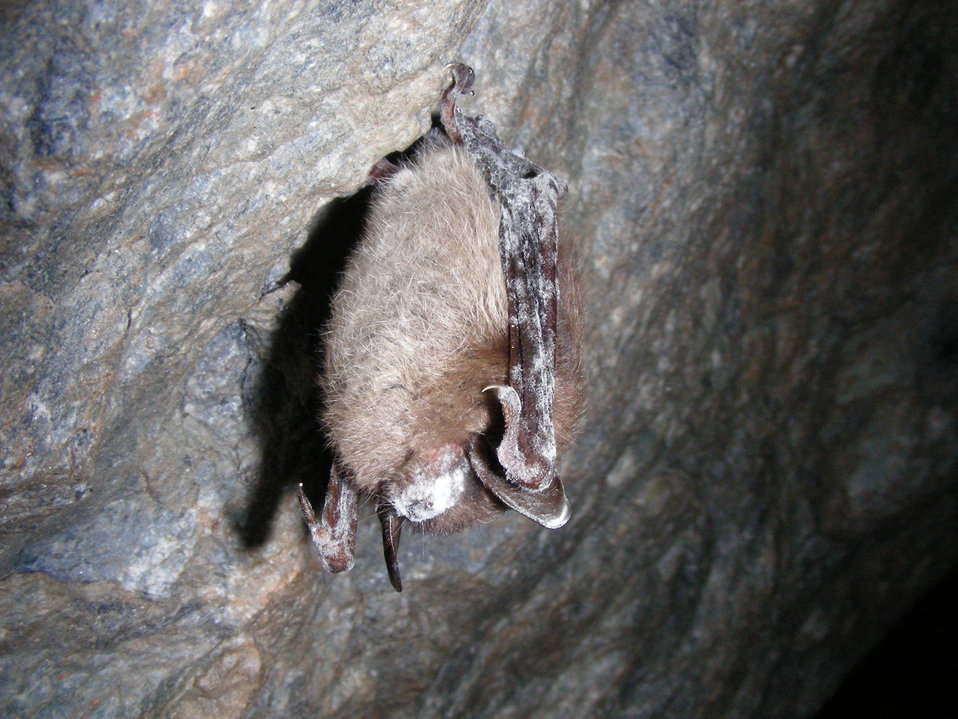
Little brown bat with white-nose syndrome in Greeley Mine, Vermont, March 26, 2009.

Credit: Marvin Moriarty/USFWS

Image size: 2816p (9.4 in.) W x 2112p (7 in.) H, 300 ppi, 5.2 MB